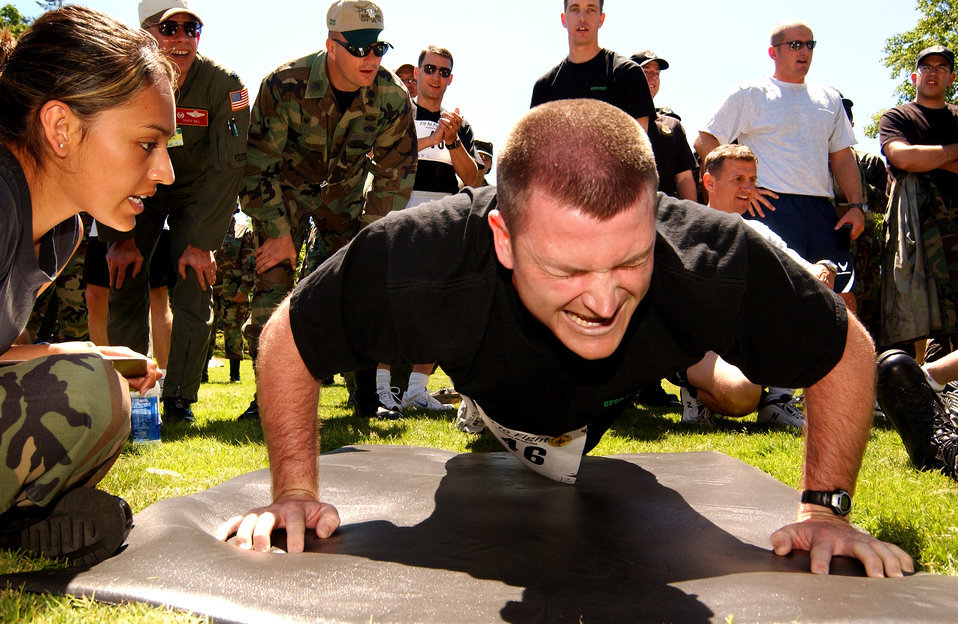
Push it

MCCHORD AIR FORCE BASE, Wash. -- Capt. Brian Collins knocks out 75 push-ups during the fit-to-fight portion of Rodeo 2005. During the event, three members from each team perform push-ups, sit-ups and the 1.5-mile run as they do on the annual Air Force fitness test. Captain Collins is assigned to the 62nd Operations Support Squadron here.